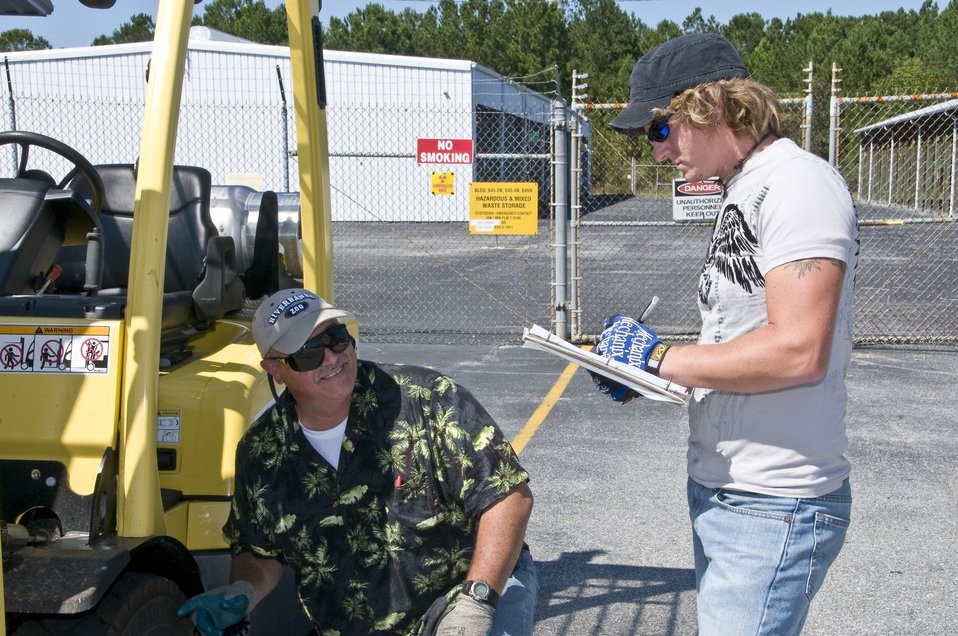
Tim Melloh and Kevin Hooks